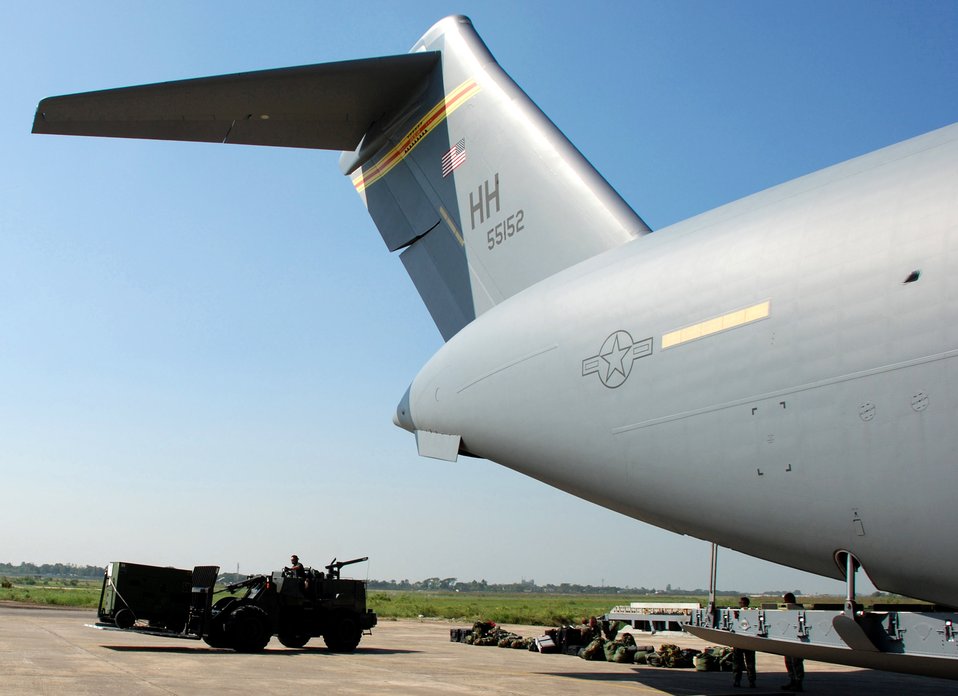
Airmen support Bangladesh relief operations

Airmen offload cargo from a C-17 Globemaster III Nov. 26 at Zia International Airport in Dhaka, Bangladesh. A 37-person team from the 36th Contingency Response Group from Andersen Air Force Base, Guam, will establish relief supply transload operations in the wake of a Nov. 15 tropical cyclone that devastated much of the southern part of the country. The C-17 and crew are from the 535th Airlift Squadron at Hickam AFB, Hawaii.